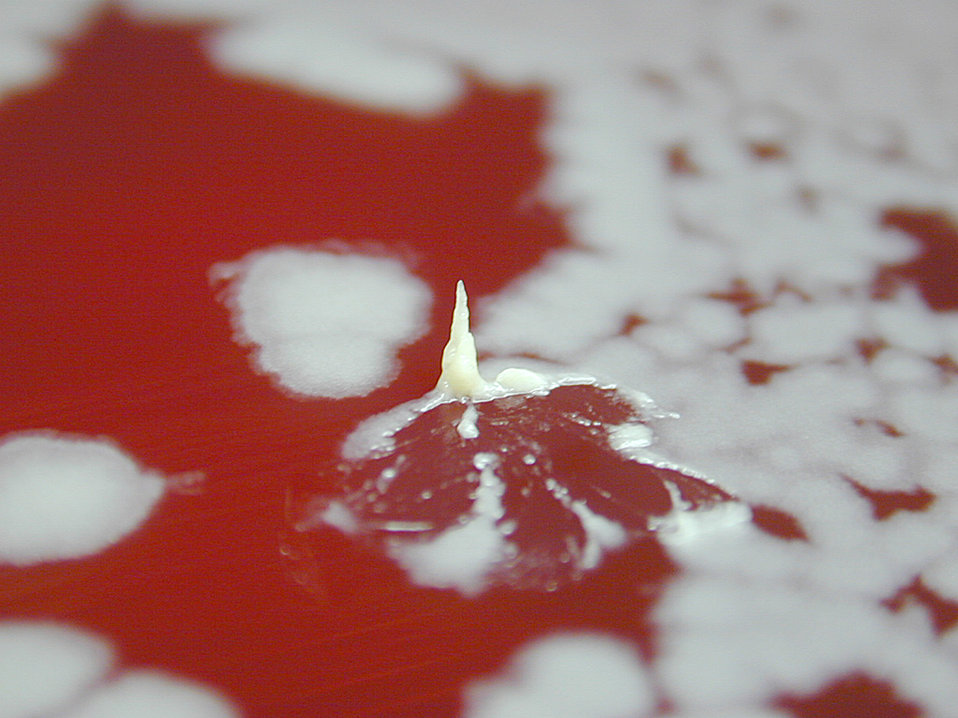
Bacillus anthracis tenacity positive on sheep blood agar.